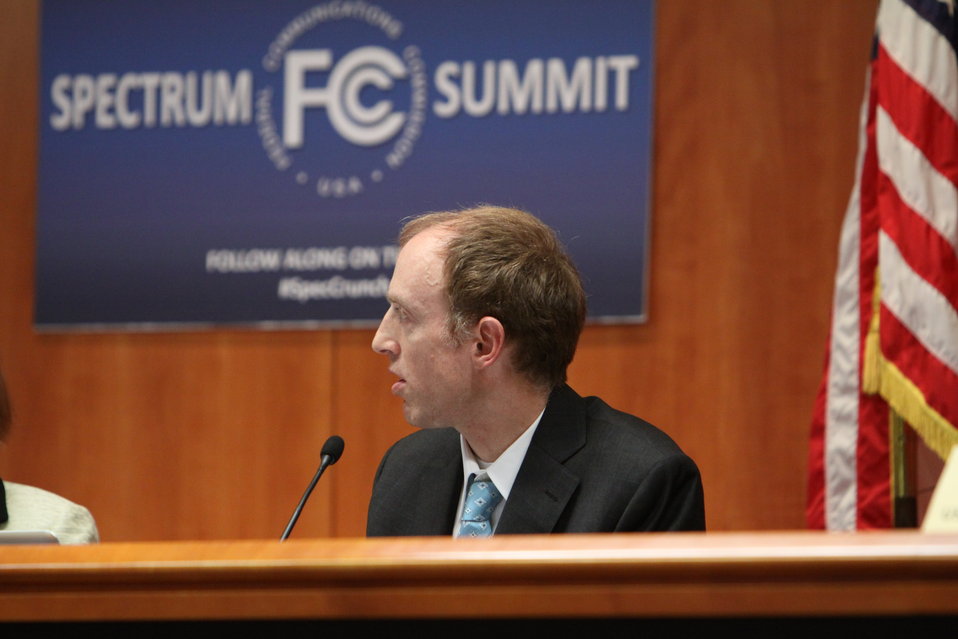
John Chapin, Massachusetts Institute of Technology

FCC Policy Solutions to Spectrum Demand Panel